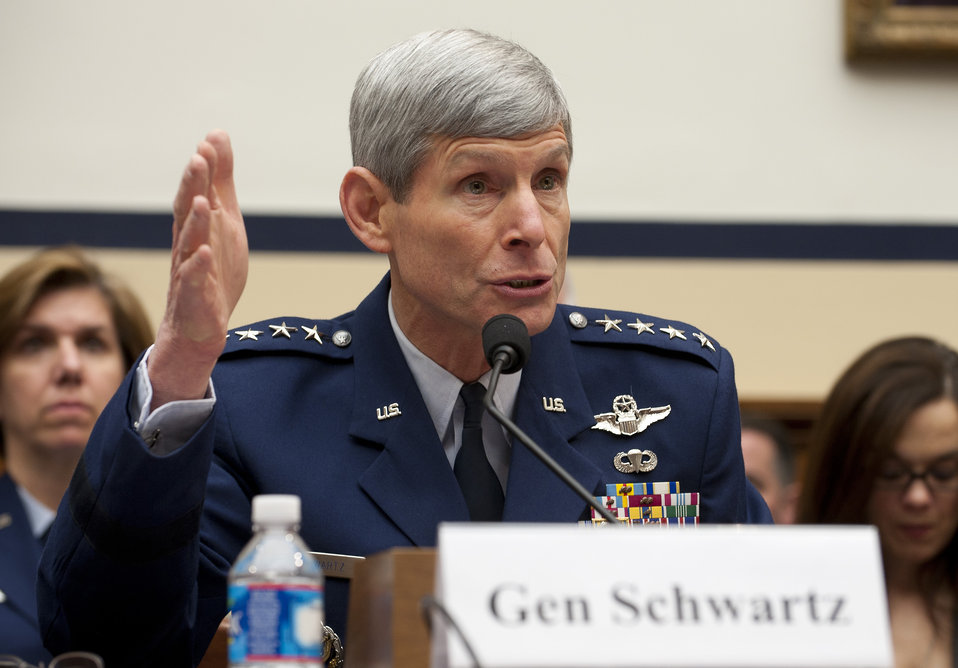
AF leaders' Capitol Hill testimony

Air Force Chief of Staff Gen. Norton Schwartz answers a question during a
hearing of the House Armed Services Committee, Feb. 28, 2012, in Washington,
D.C. Both Schwartz and Secretary of the Air Force Michael Donley were on
Capitol Hill to discuss the Air Force's Fiscal Year 2013 National Defense
Authorization Budget Request.